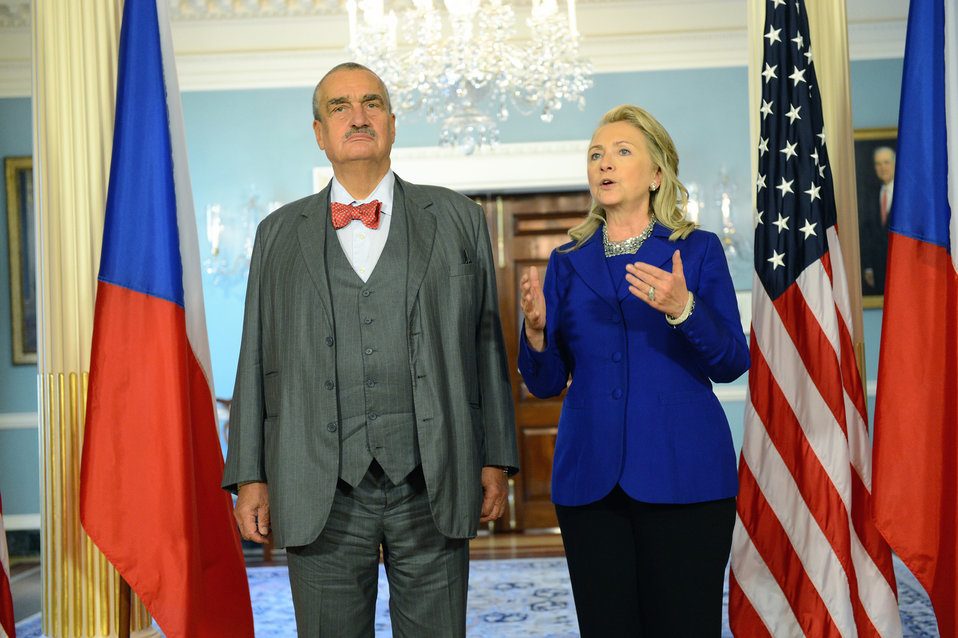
Secretary Clinton Meets With Czech Republic Foreign Minister Schwarzenberg

U.S. Secretary of State Hillary Rodham Clinton meets with Czech Republic Foreign Minister Karel Schwarzenberg at the U.S. Department of State in Washington, D.C., September 21, 2012.